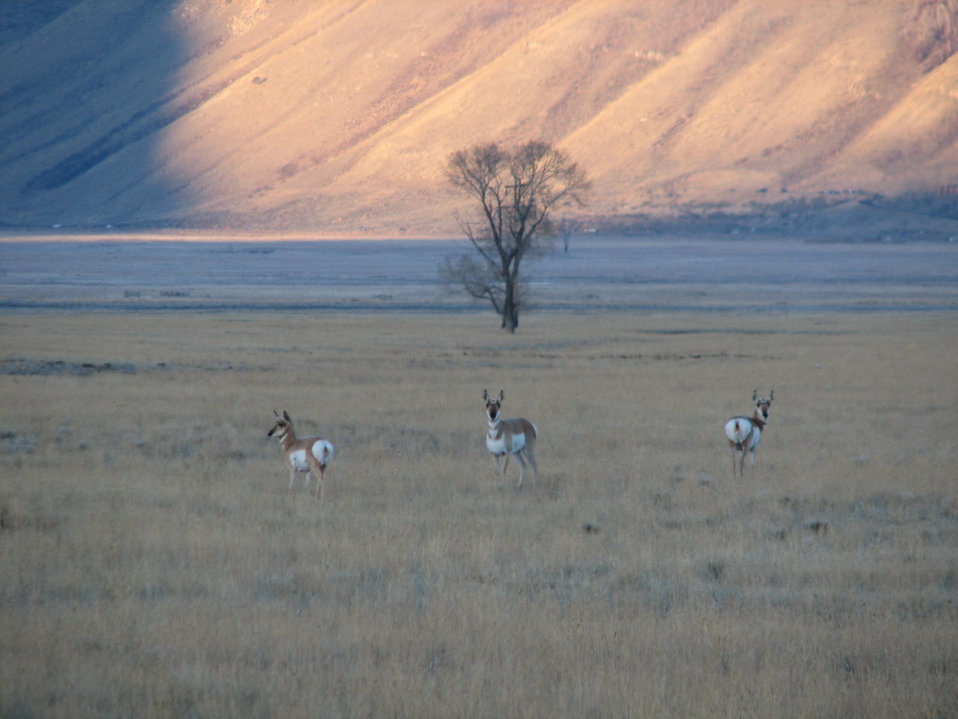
Fleet-Footed Residents

Pronghorns in the Jackson Hole valley migrate as far as 150 miles each way between Wyoming’s Upper Green River Basin and Grand Teton National Park. A small herd segment of 40-50 animals summer on the National Elk Refuge.

Pronghorns are among the fastest animals in North America. They can run at speeds of more than 50 miles per hour and are also great distance runners.